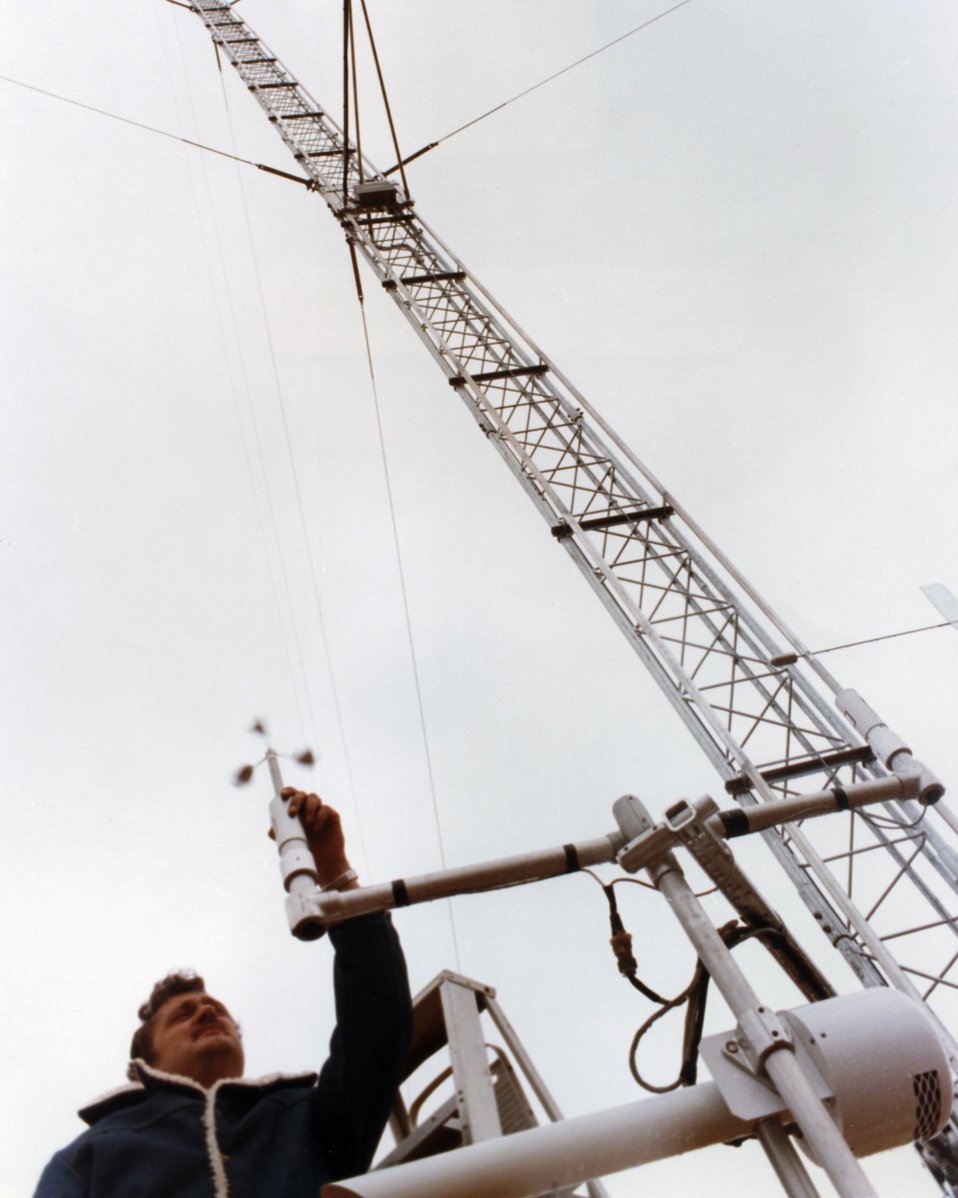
TECHNICIAN ADJUSTS ANEMOMETER AT WIPP STUDY SITE WEATHER STATION.

DETAILED WEATHER INFORMATION (PAST AND PRESENT) IS VITAL IN HELPING TO DETERMINE THE SUITABILITY OF THE SITE FOR THE LOCATION OF WIPP, AND FOR CALCULATING THE ENVIRONMENTAL IMPACTS OF POSTULATED ACCIDENT SCENARIOS.